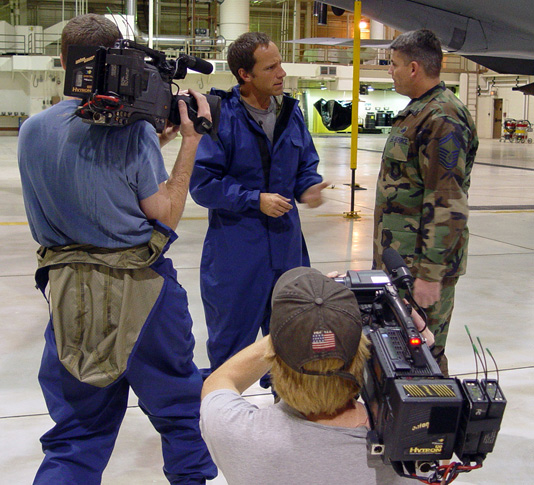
Dirty jobs

MCCONNELL AIR FORCE BASE, Kan. (AFPN) -- Mike Rowe, host and star of the Discovery Channel's